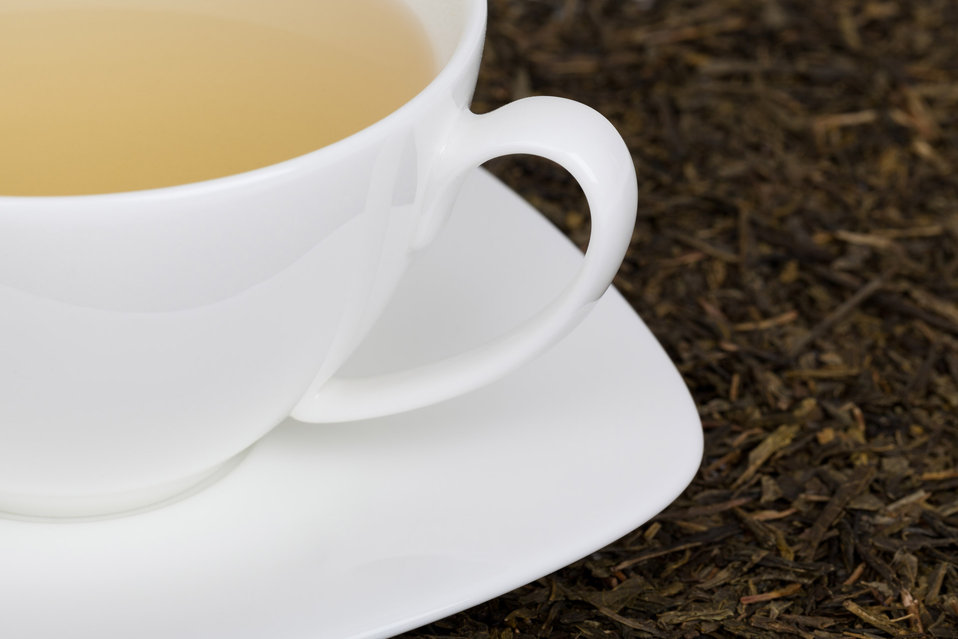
Detail of a cup with tea

A cup of a green tea with green tea leaves background.